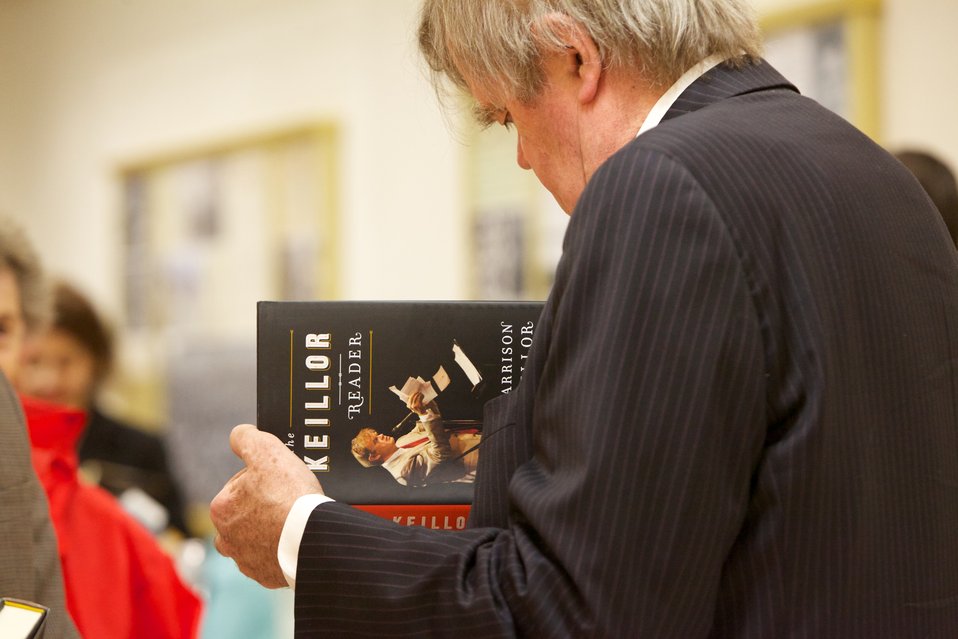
The Keillor Reader